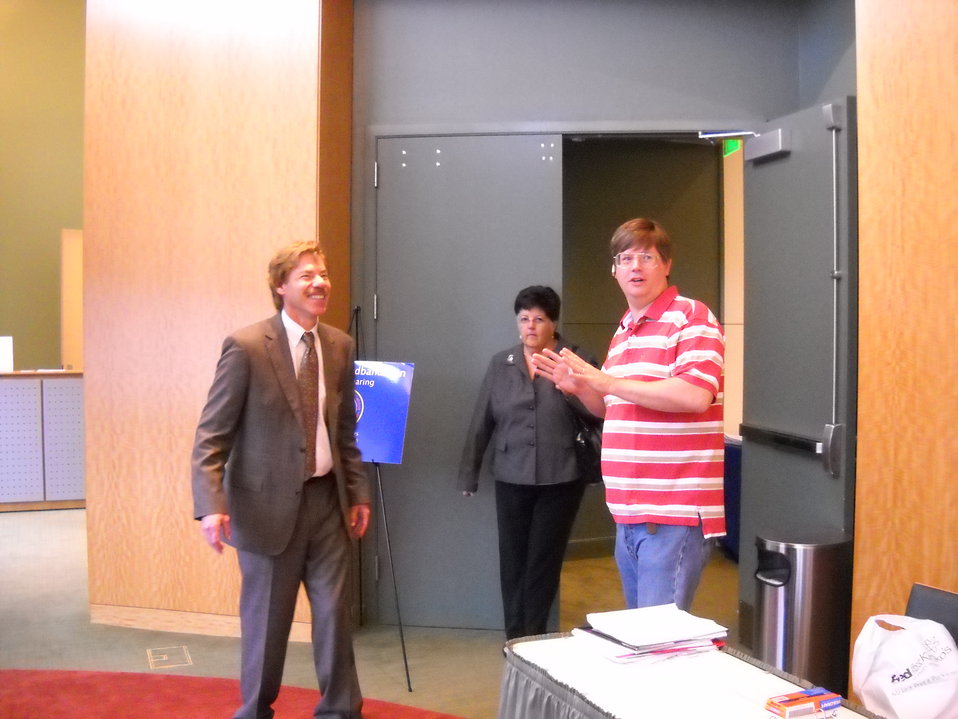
Field Hearing on Broadband Adoption 10-6-09